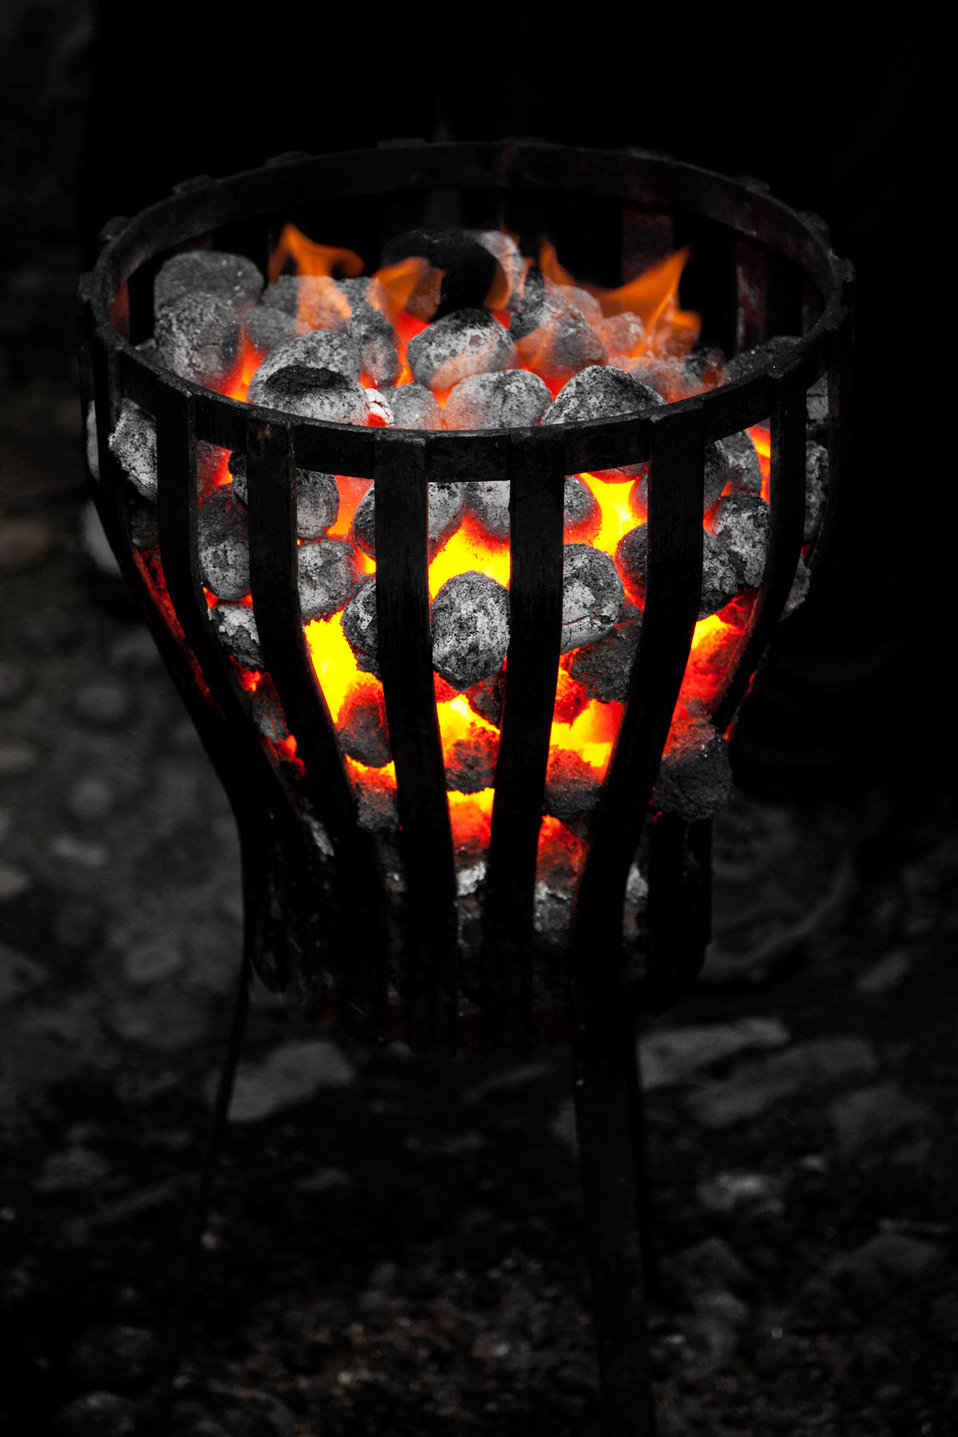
Warm fire outside

Coal fire outside to keep you warm.